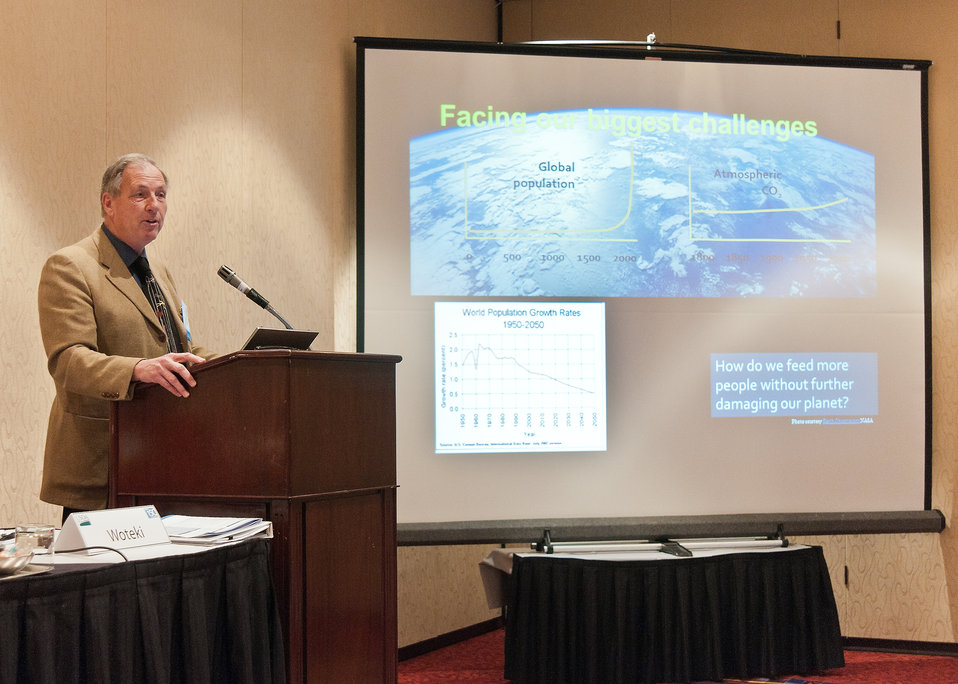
Ken Richards, Research Manager (retired), Canadian Genetic Resource Program, Plant Gene Resources of Canada, Agriculture and Agri-Food Canada, Saskatoon Research Centre Saskatoon, Saskatchewan Alberta, Canada spoke at the Global Food Security afternoon breakout session at the 2012 Agricultural Outlook Forum, “Moving Agriculture Forward, Growing, Innovating and Celebrating 150 Years” held at the Crystal gateway Marriott Hotel Arlington, Virginia, Friday, February 24, 2012. The session discussed and reviewed challenges associated with feeding a growing world population with a currently strained resource base.